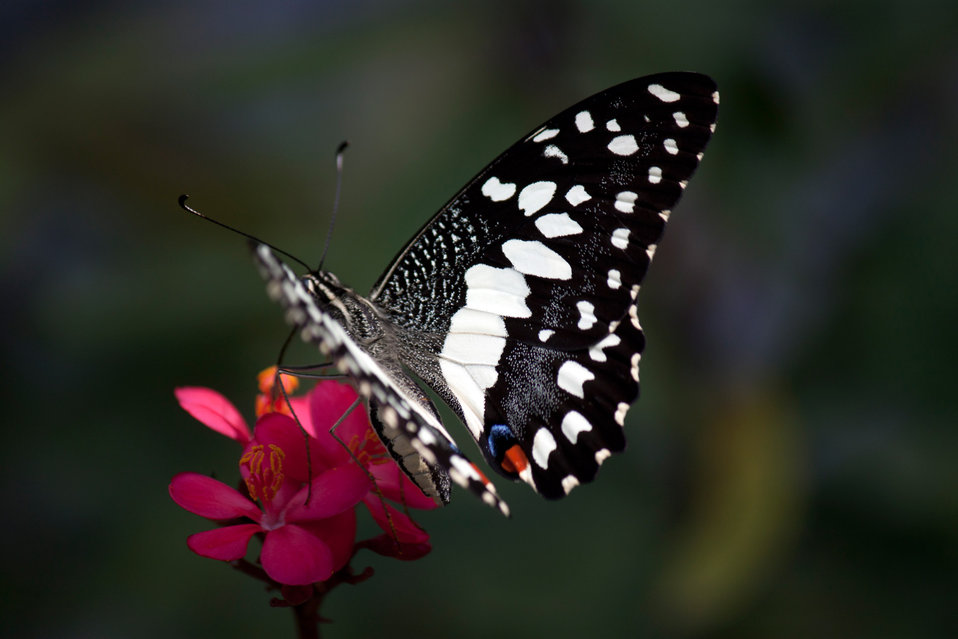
Butterfly stop on the flower

Black white butterfly stop on the flower.